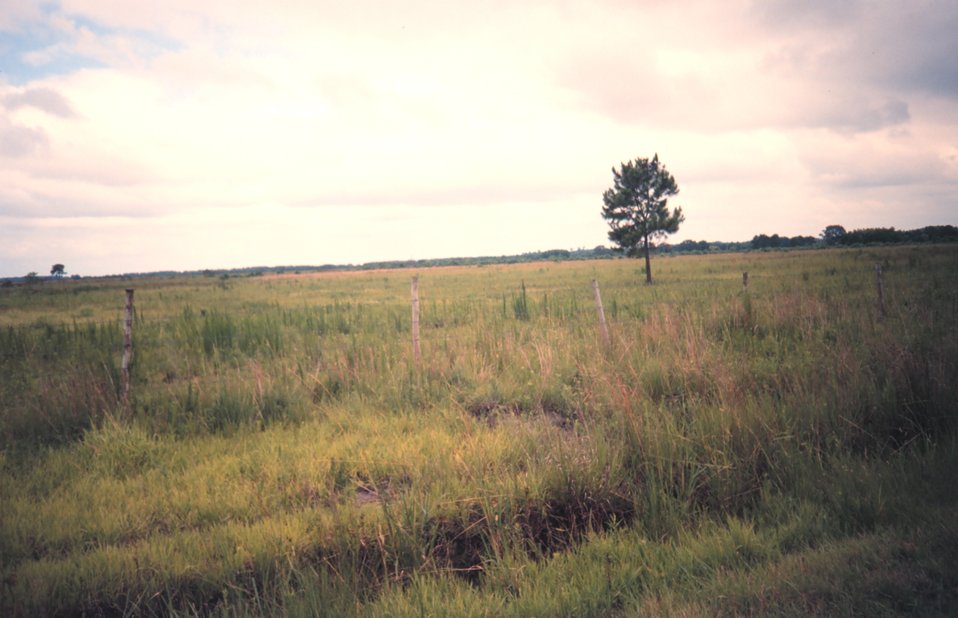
Marsh land that has been converted to pasture by cutting canals, building levees , and pumping out water. Exposure to air caused oxidation of organic matter in soil which led to rapid subsidence.